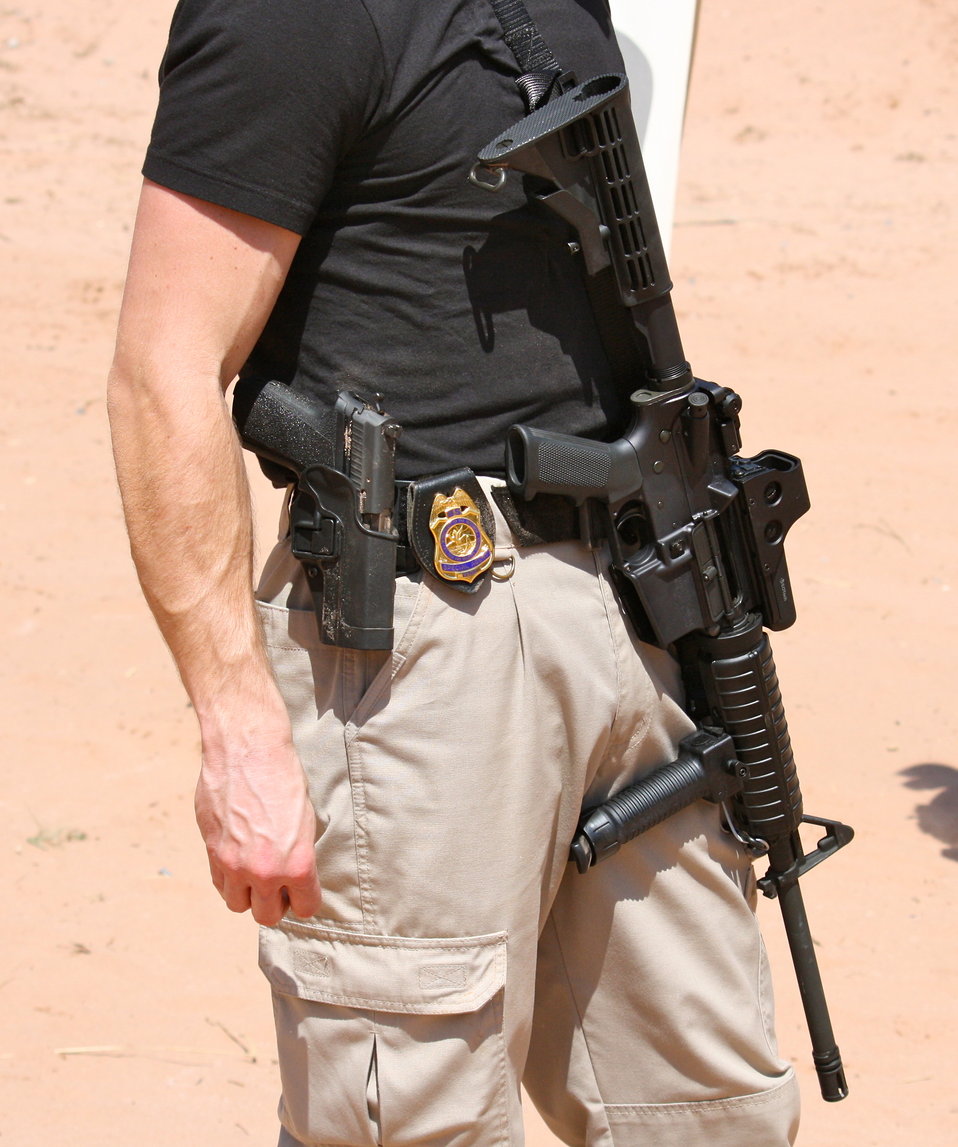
Special Agent with Sidearm, AR-15 and Badge

Law Enforcement target practice at outdoor shooting range in Glastonbury, CT.